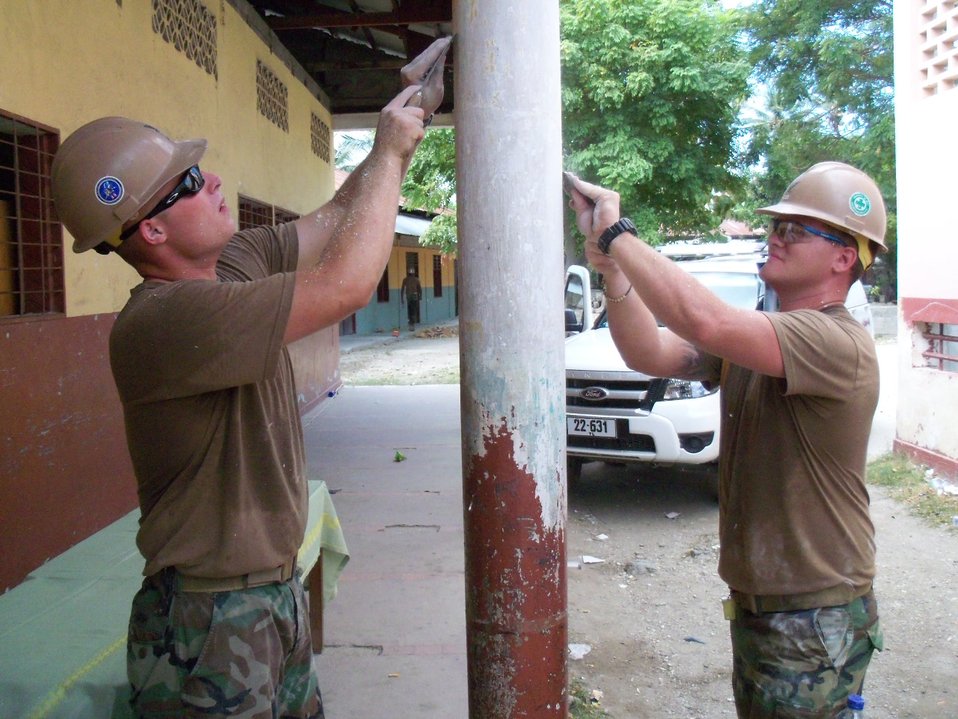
Utilitiesman 3rd Class (SCW) Hursh and Equipment Operator 3rd Class (SCW) Hicks Scrape Old Paint Off the Pillars

Utilitiesman 3rd Class (SCW) Steven Hursh and Equipment Operator 3rd Class (SCW) Dustin Hicks, both with Naval Mobile Construction Battalion (NMCB) 11 out of Gulfport, Miss., scrape old paint off the pillars at the EP Nu Laran School in Dili, Timor-Leste, on August 4, 2010. New paint will be applied to all the pillars, buildings and inside the classrooms during the renovation. The renovation project is part of Pacific Partnership 2010, the fifth in a series of annual U.S. Pacific Fleet humanitarian and civic assistance endeavors aimed at strengthening regional partnerships.